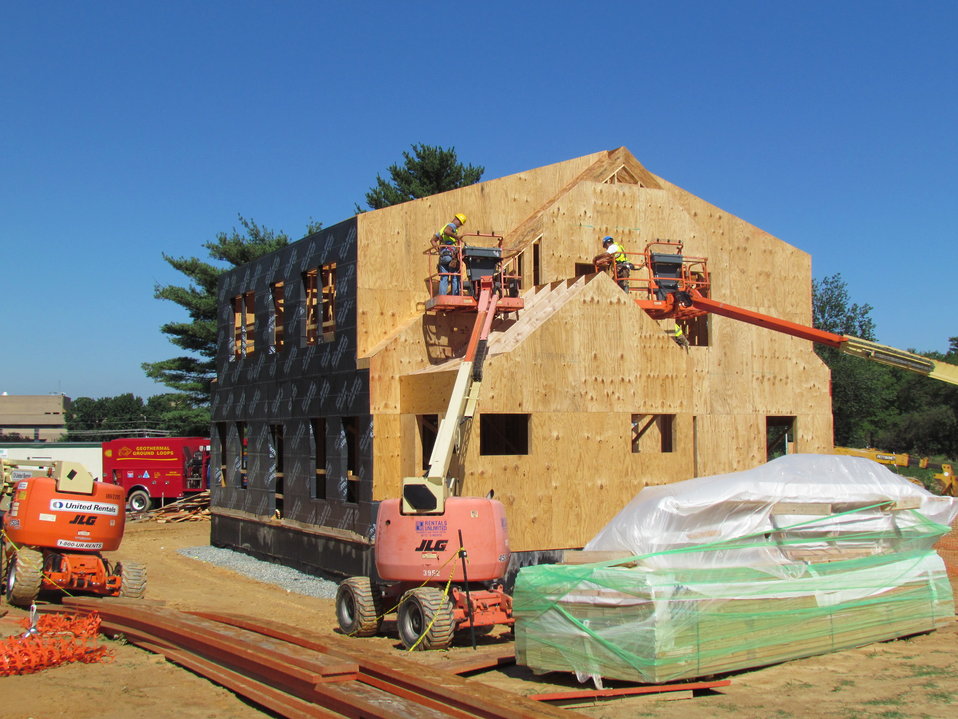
Net-Zero Energy Residential Test Facility - Workmen beginning installation of air/moisture barrier on lower roof on east side of facility.